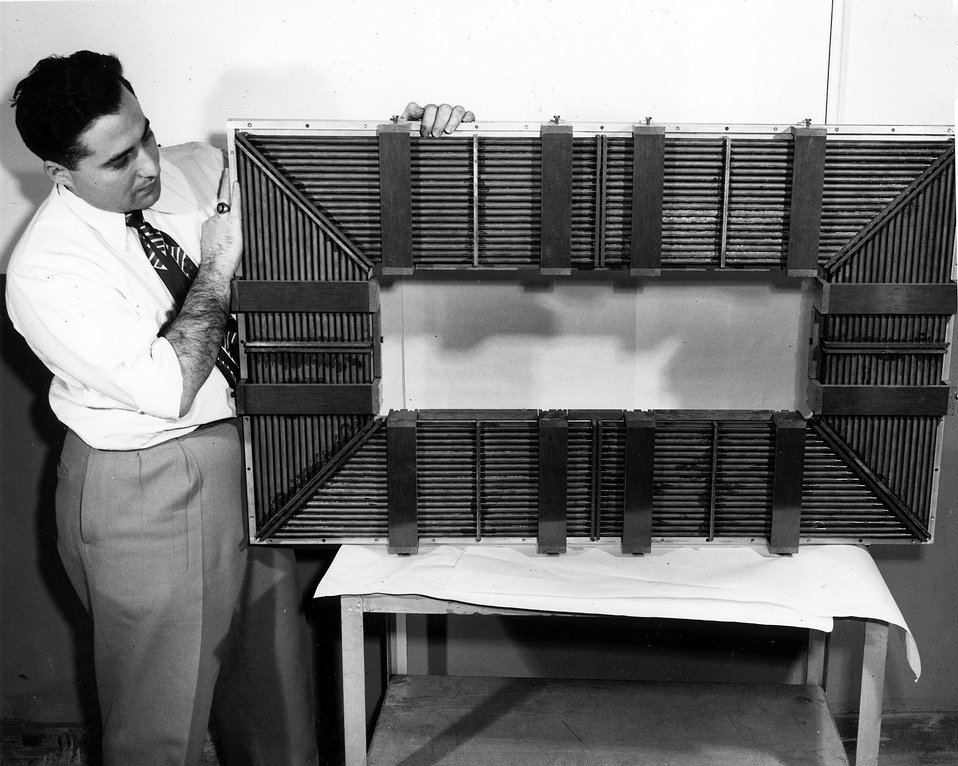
One section of core material for the fer rite cavity. c. 1950